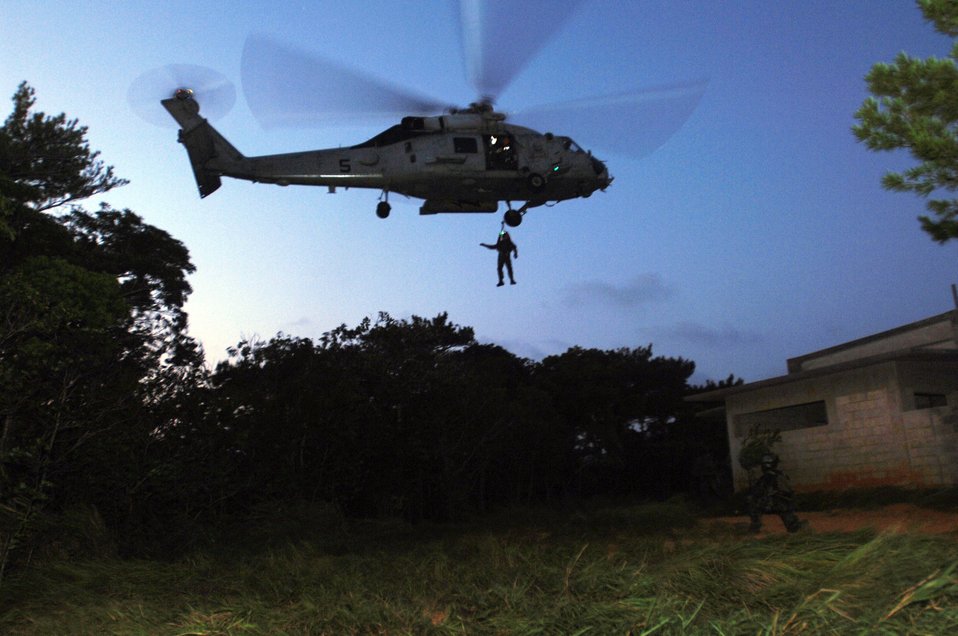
Airmen join Sailors, Marines for JASEX 05

KADENA AIR BASE, Japan -- A Sailor is extracted by a Navy HH-60G Pave Hawk during Joint Air and Sea Exercise 2005 here. U.S. Air Force pararescuemen and Sailors